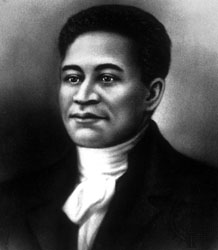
Keeping tradition

FILE PHOTO -- Crispus Attuck was the first to lose his life in the cause of American independence. His decedents continued to fight for America; one of them is now stationed at McGuire Air Force Base, N.J., and another at Seymour Johnson AFB, N.C.